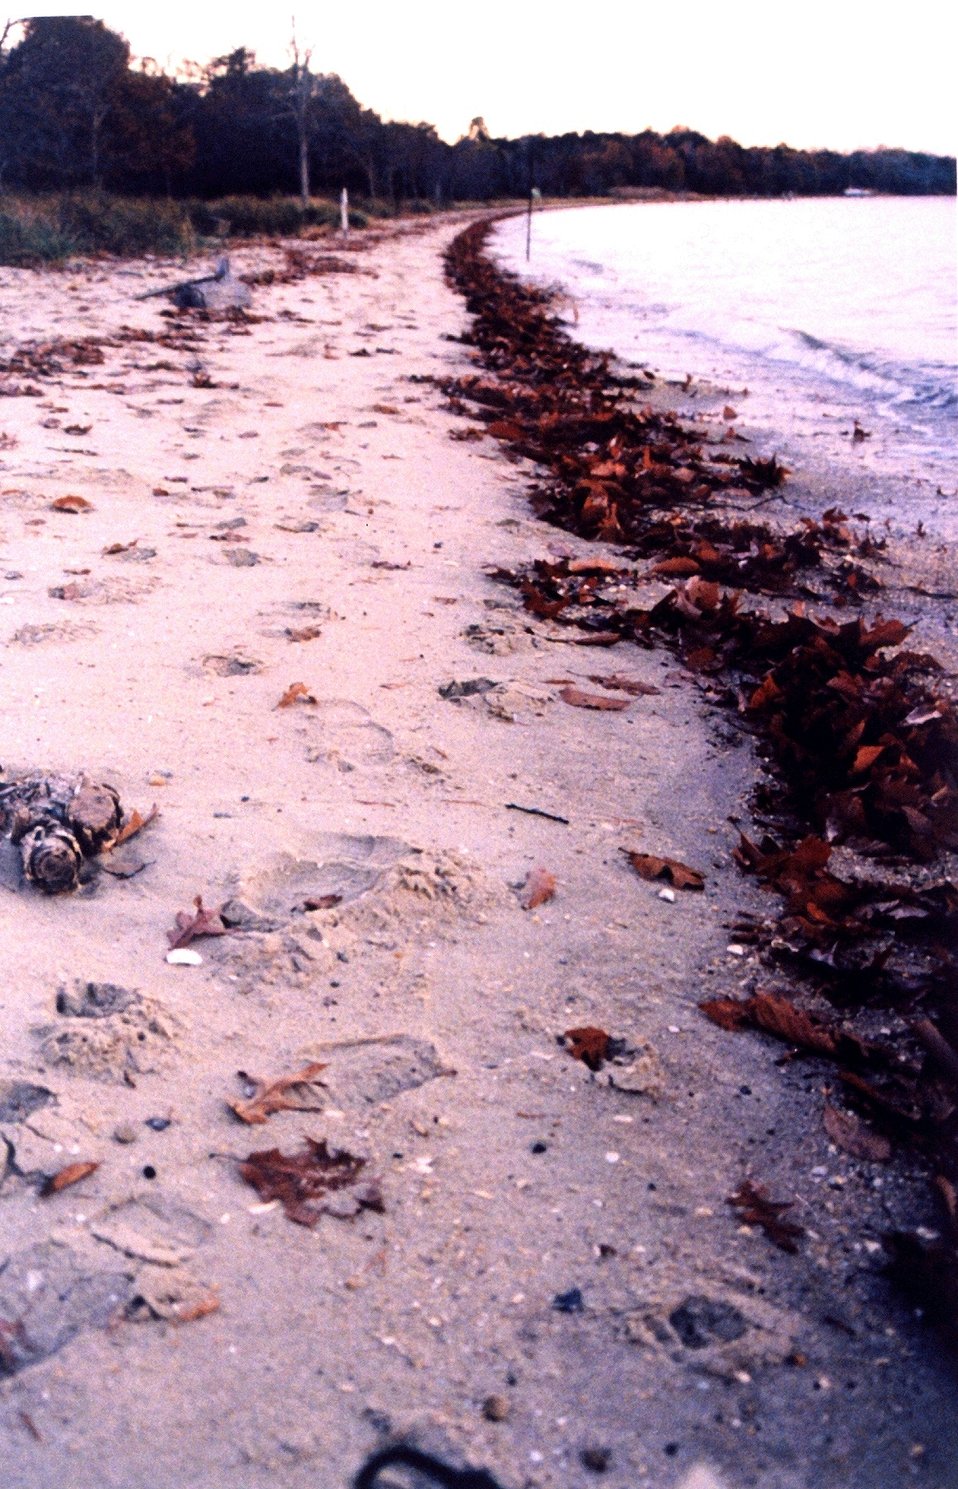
Fall leaves lining a Patuxent River beach.